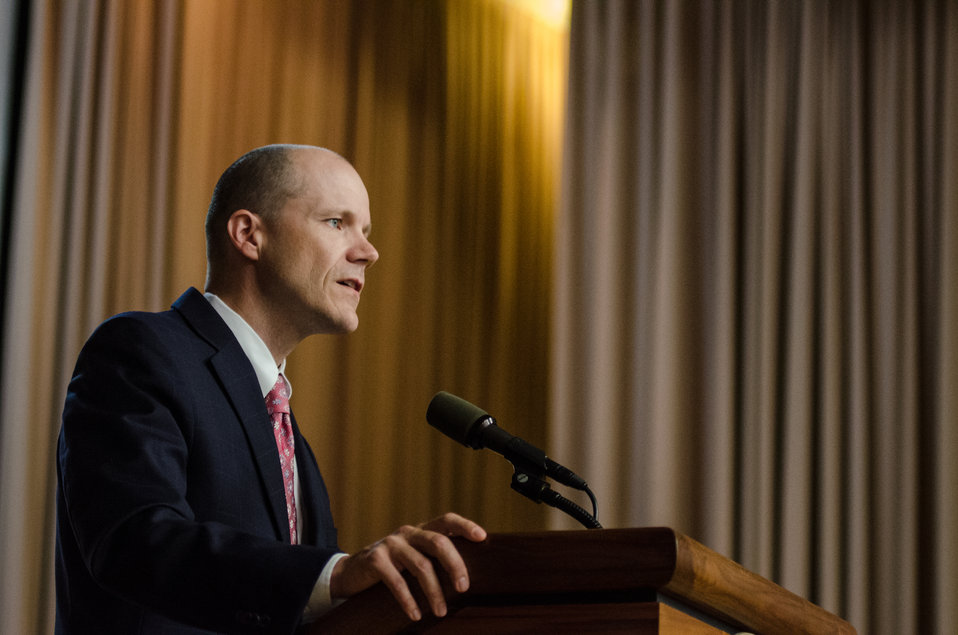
U.S. Department of Agriculture (USDA) Rural Development’s (RD) Acting Under Secretary Doug O'Brien speaks at the 2nd Annual Cultural Transformation kickoff opening ceremony and forums, themed “Employees Influencing Change,” on Tuesday, Aug. 13, 2013 at USDA in Washington, D.C.